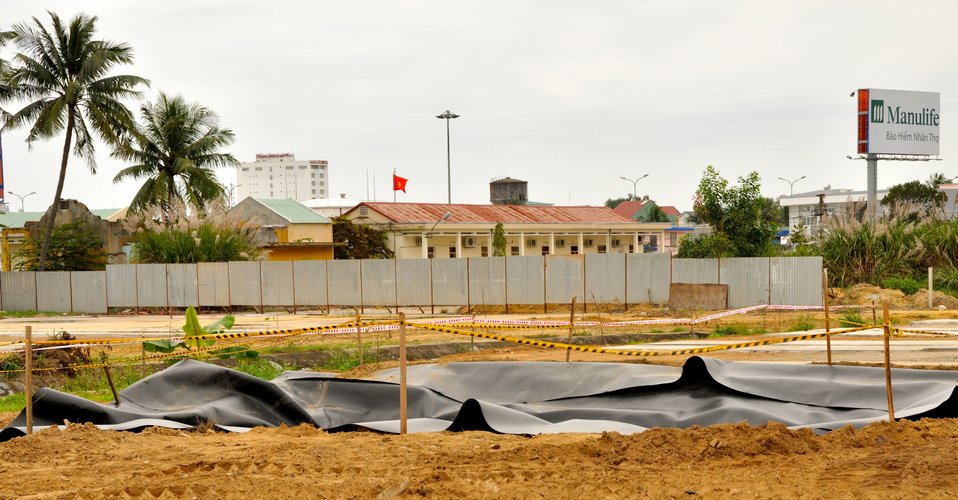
Site Preparation for Environmental Remediation of Dioxin Contamination at Danang Airport

Danang Danang Airport, January 22, 2013

Photo: Richard Nyberg @USAIDVietnam

Photo: Richard Nyberg @USAIDVietnam
ediation Site Visit